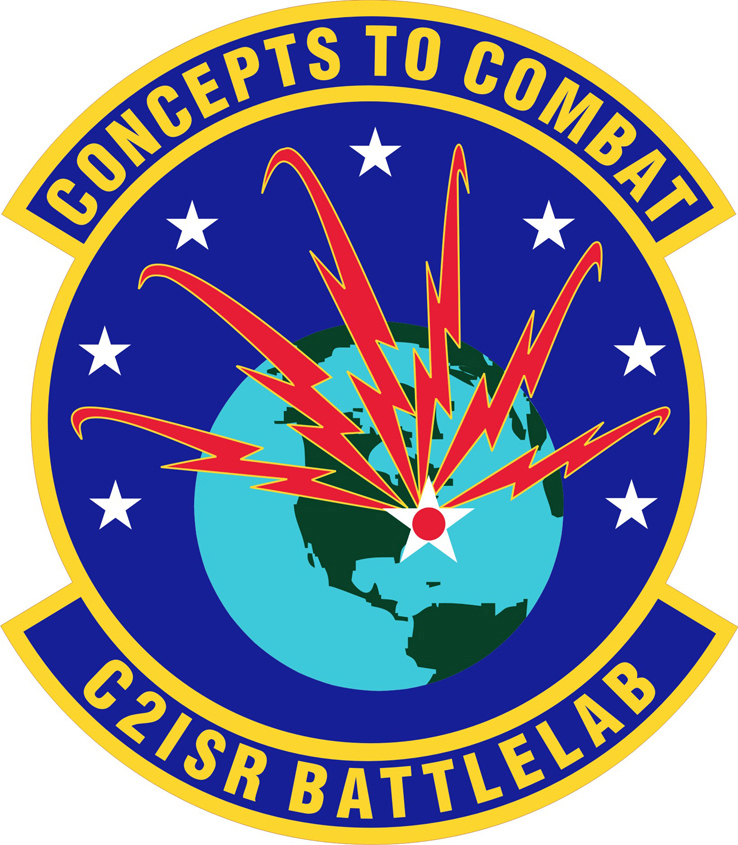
C2ISR Battlelab Inactivation Ceremony

The Command and Control, Intelligence, Surveillance and Reconnaissance Battlelab held its official inactivation ceremony June 14 at Langley Air Force Base, Va. Officials announced the C2ISRB, along with all other Air Force battlelabs, will close by Oct. 1 due to tightening fiscal constraints across the Air Force.